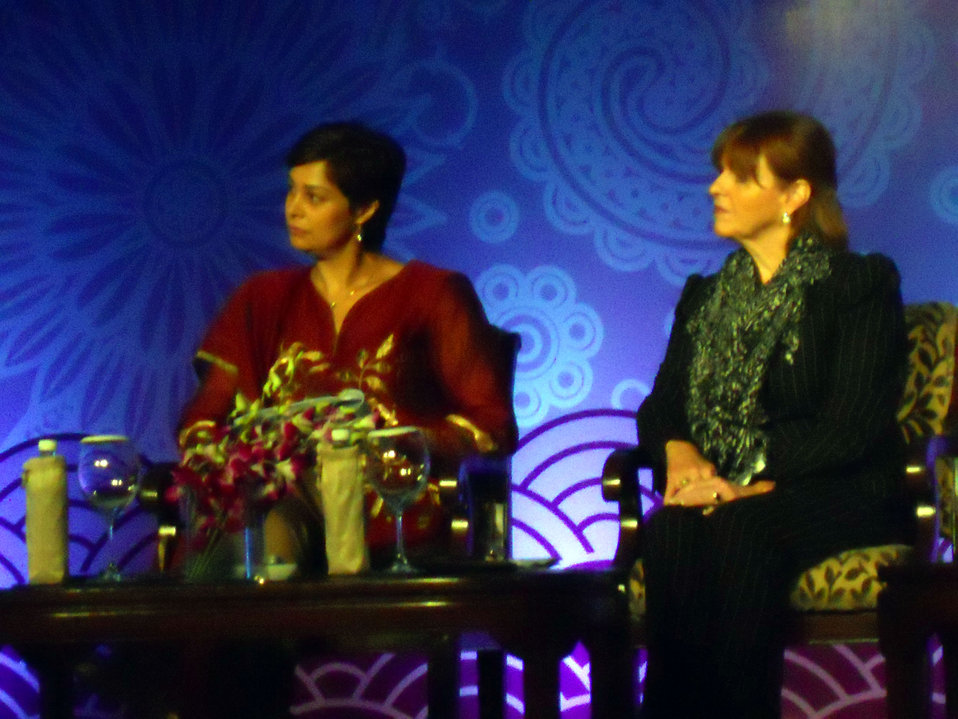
CNN International's Verjee, the Moderator, and Vital Voices' Davis, a Panel Participant, Listen as a Panel Participant Speaks

CNN International's Zain Verjee (left), the moderator, and Vital Voices' Susan Davis (right), a panel participant, listen as a participant of the panel discussion speaks at the Vital Voices Women's Empowerment Summit in New Delhi, India, on September 15, 2010. [State Department photo/ Public Domain] Vital Voices Women's Empowerment Summit in New Delhi, India, on September 15, 2010.